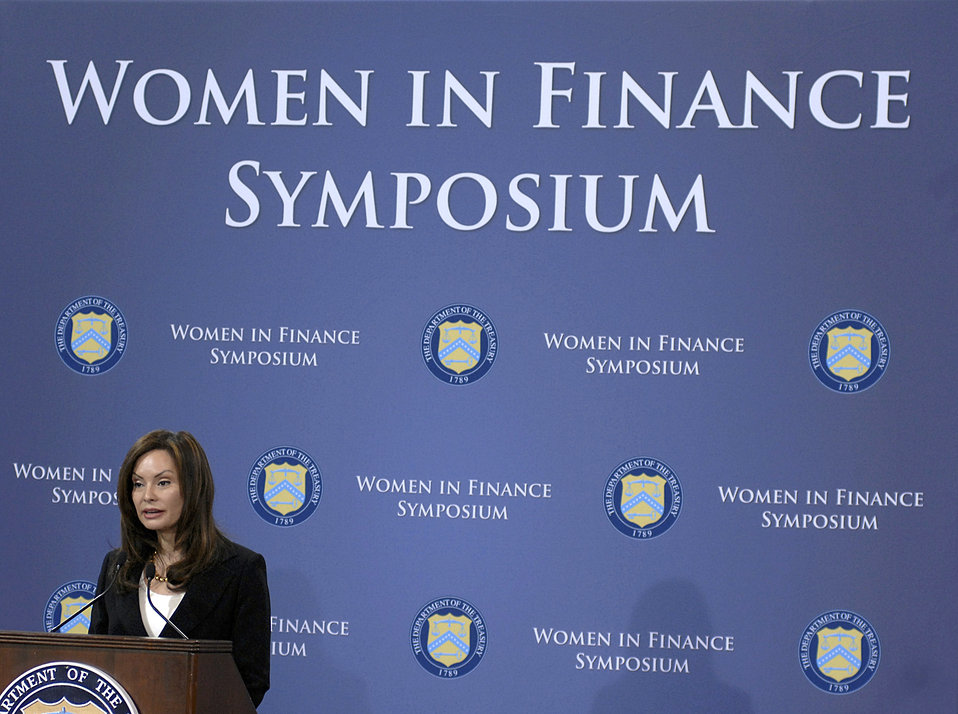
Women in Finance Symposium, 03/29/2010

Treasurer Rios speaks at the Women in Finance Symposium, March 29, 2010.